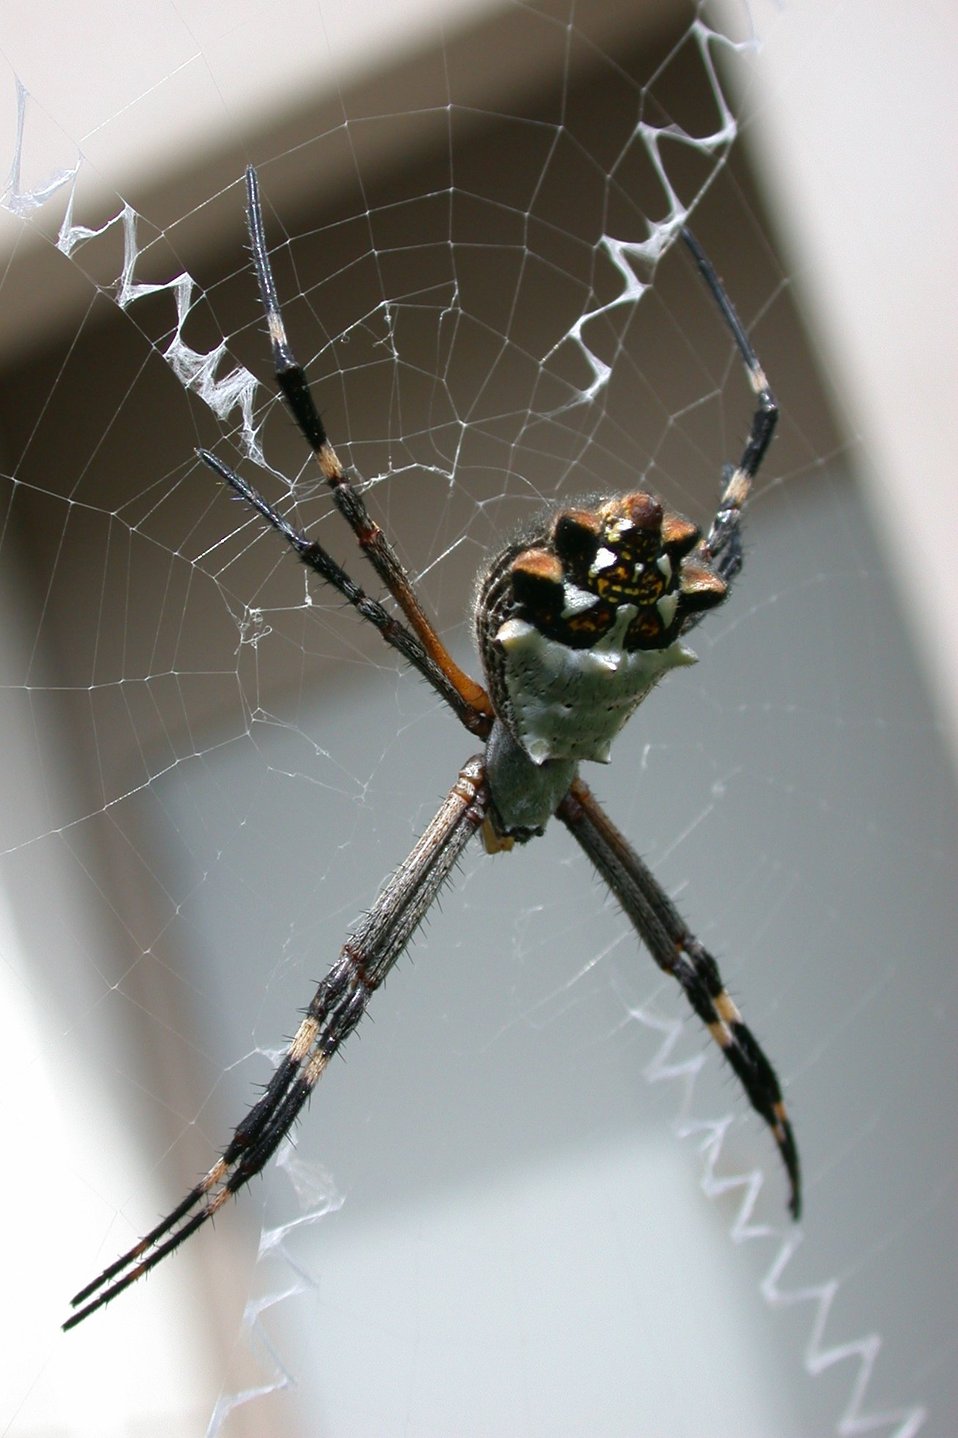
Same Argiope argentata]], taken in Carlsbad, California.